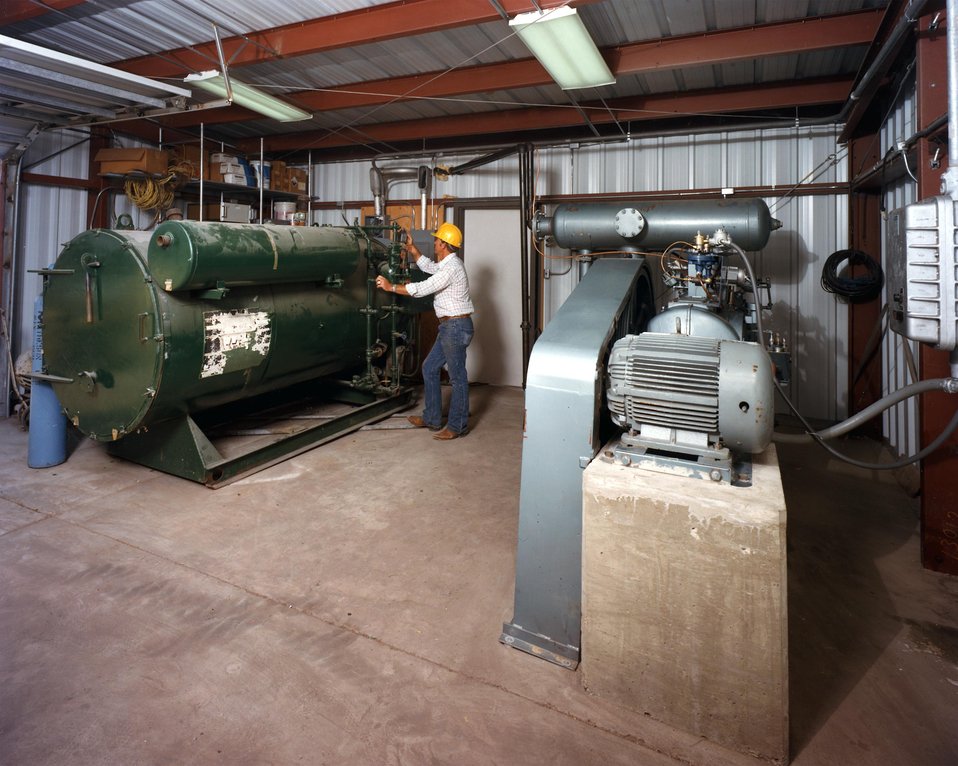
TECHNICIAN ADJUSTS THE 100 HP BOILER PLANNED FOR USE IN LATER PHASES OF THE PROJECT.

THE WOOD GASIFIER AT THE UNIVERSITY OF MISSOURI IS PART OF THE PROGRAM TO DEVELOP BIOMASS AS A FUEL SOURCE. WOOD CAN BE PROCESSED TO PRODUCE MEDIUM BTU GAS THAT CAN BE USED DIRECTLY OR UPGRADED INTO SUCH FUELS AS SYNTHETIC NATURAL GAS, METHANOL, AMMONIA, AND PETROCHEMICAL SUBSTITUTES. THE MAIN OBJECTIVE OF THIS PROGRAM IS TO IMPROVE CONVERSION EFFICIENCY AND PRODUCTIVITY AND REDUCE PRODUCTION COSTS OF THE GASIFICATION PROCESS.